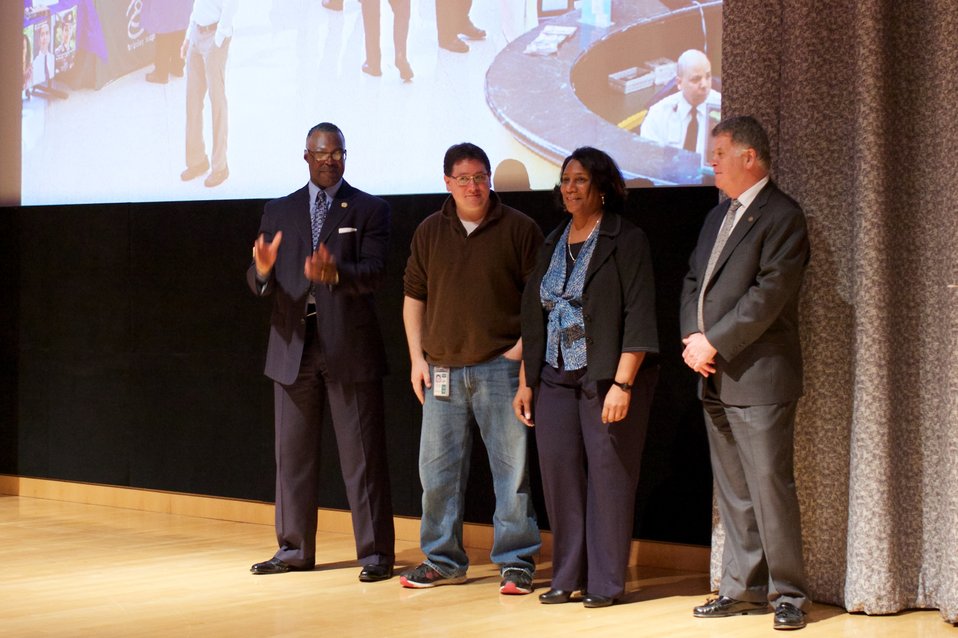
CFC Recognition Event